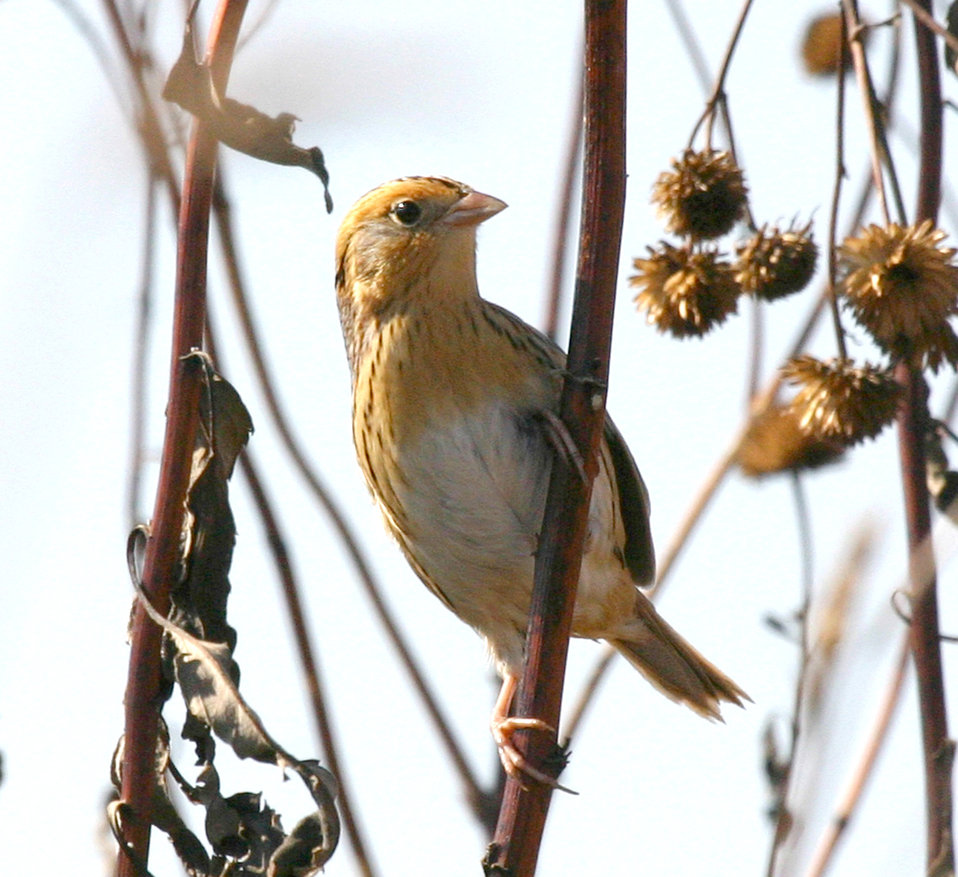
LeConte's Sparrow, Neal Smith Refuge

A normally hard-to-spot Le Conte's Sparrow shows himself at Neal Smith National Wildlife Refuge in Iowa.